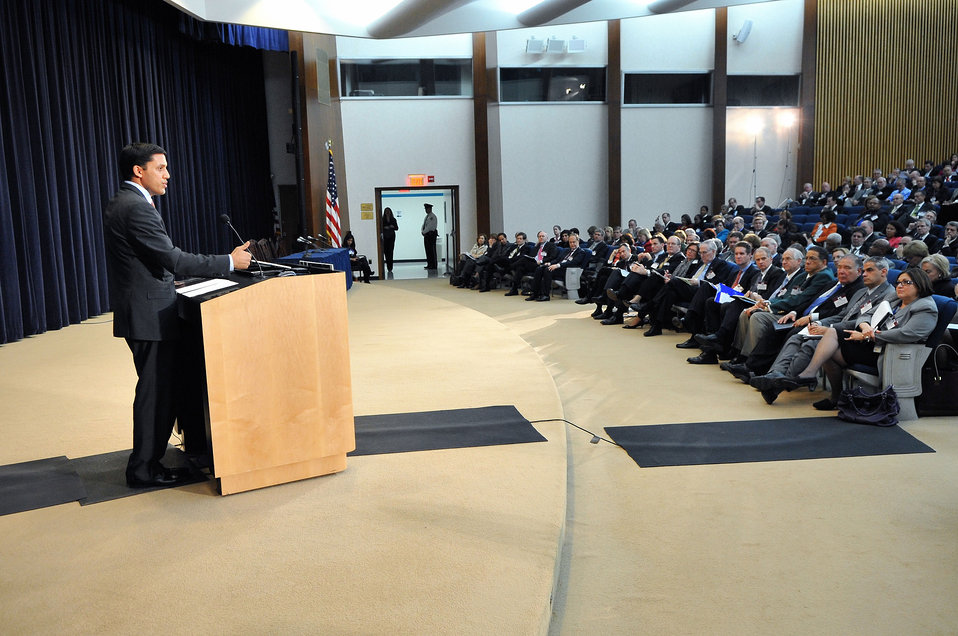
USAID Administrator Shah Delivers Remarks

USAID Administrator Rajiv Shah delivers remarks at the 2011 Global Chiefs of Mission Conference at the U.S. Department of State in Washington, D.C., on February 2, 2011.